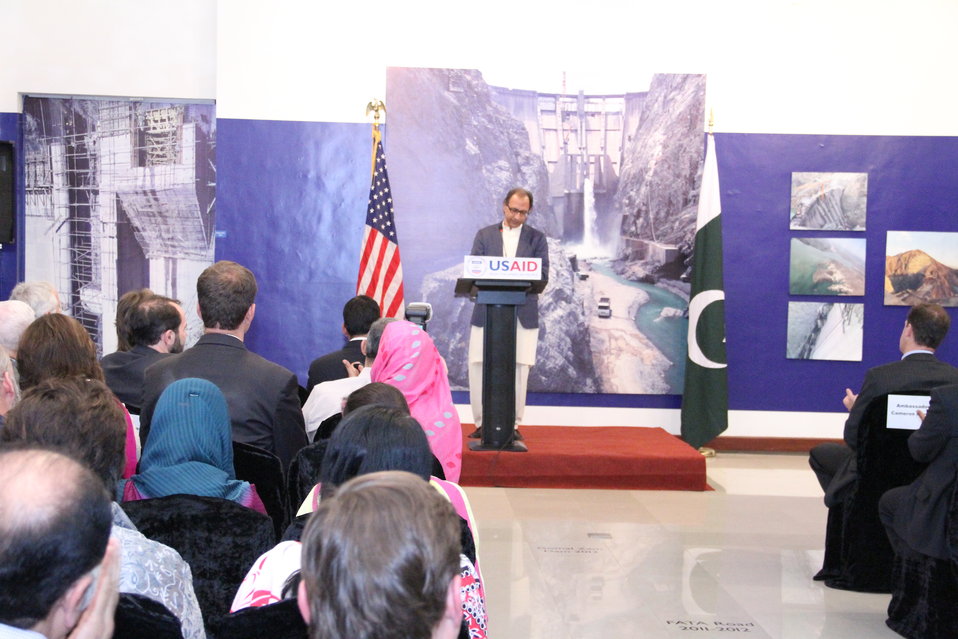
Photo Exhibition Celebrate US-PAK Cooperation at PNCA, Islamabad on April 13, 2012

Dr. Abdul Hafeez Sheikh, Federal Minister for Finance addressing the media